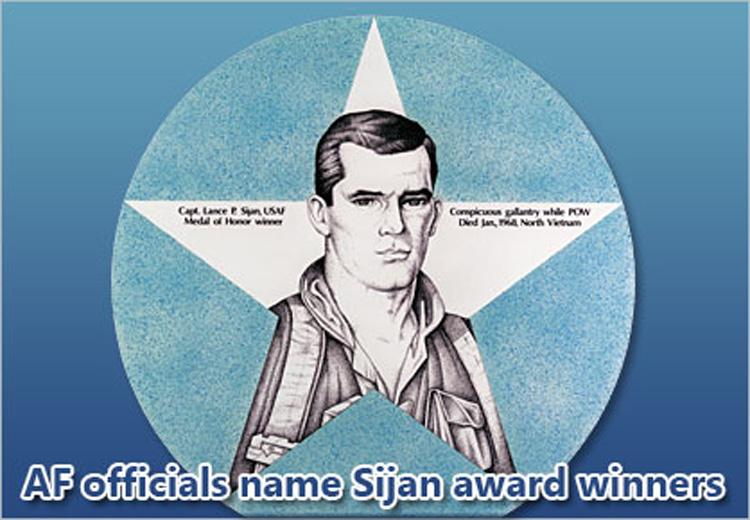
Sijan award

Air Force officials recently recognized four Airmen with the service's 2009 Lance P. Sijan Air Force Leadership Award. The Sijan award annually recognizes Airmen who demonstrate outstanding leadership abilities.